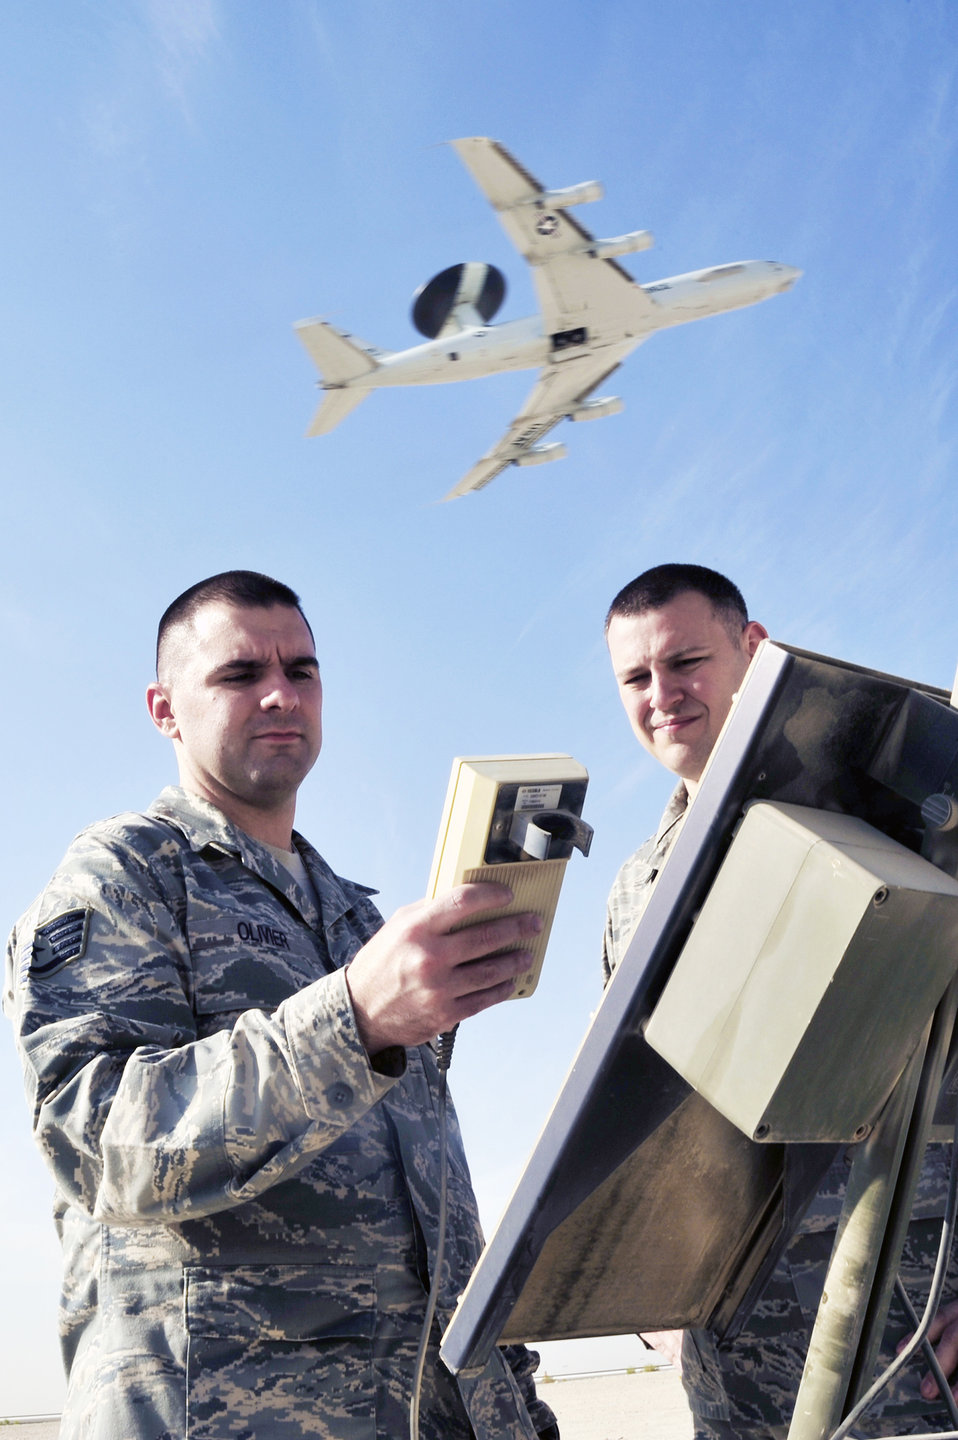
Charge check

As an E-3 Sentry flies overhead, Staff Sgts. Jeremy Olivier and Joshua Mace check the battery on a solar power cell for a tactical meteorological observation system Nov. 4, 2009, at an air base in Southwest Asia. The Airmen are weather forecasters with the 380th Expeditionary Operations Support Squadron.